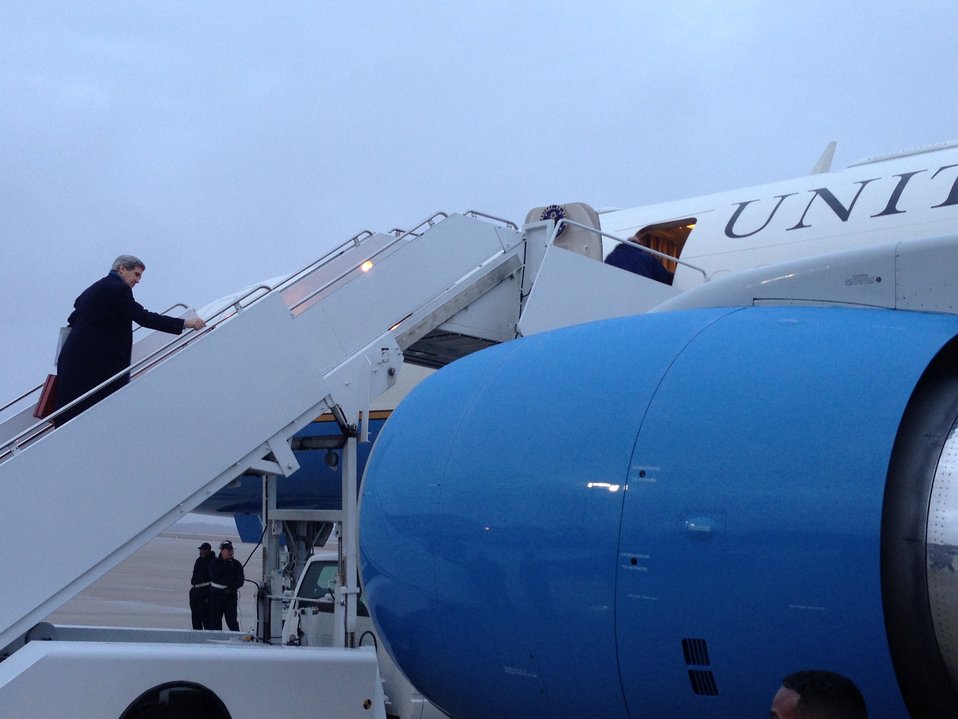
Secretary Kerry Departs for Europe and the Middle East

U.S. Secretary of State John Kerry boards a U.S. Air Force Boeing 757 at Andrews Air Force Base en route to Europe and the Middle East for his inaugural overseas trip as Secretary of State, February 24, 2013.